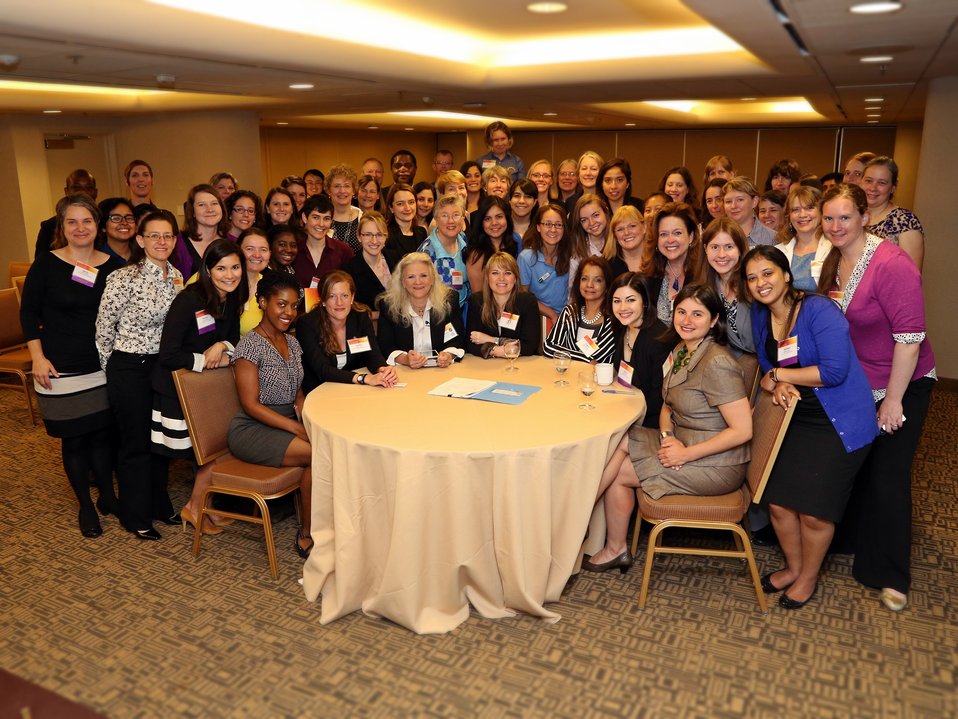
Women in Solar Breakfast 7